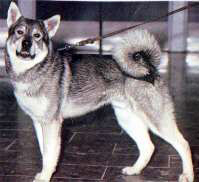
Jamthlnd